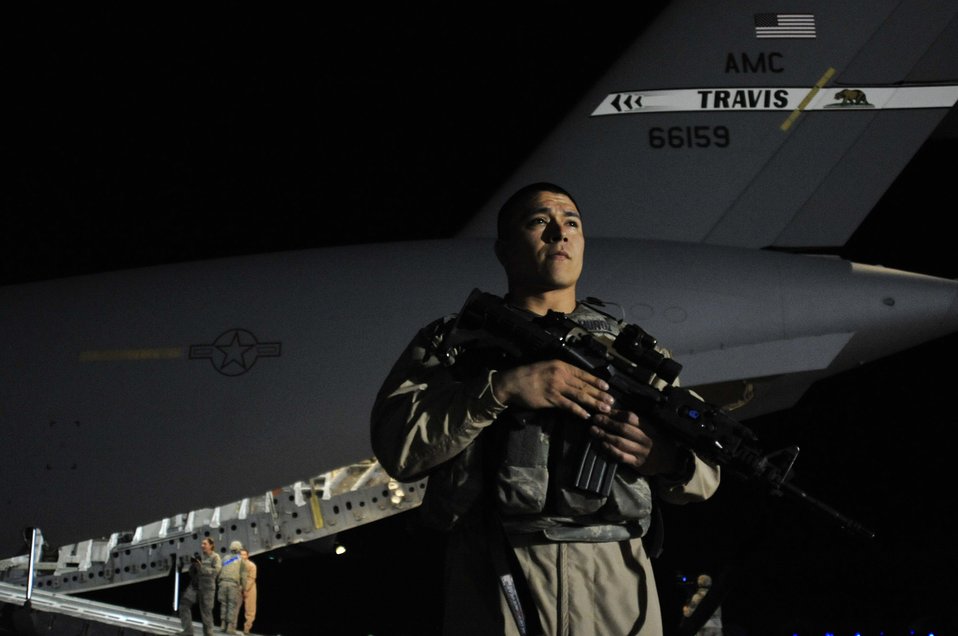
Last Airmen flying out of Iraq

Staff Sgt. Gerardo Munoz guards a C-17 Globemaster III that will transport the last Airmen from Iraq on Dec. 18, 2011, at Ali Air Base, Iraq. Munoz is a security forces member assigned to the 385th Air Expeditionary Group.